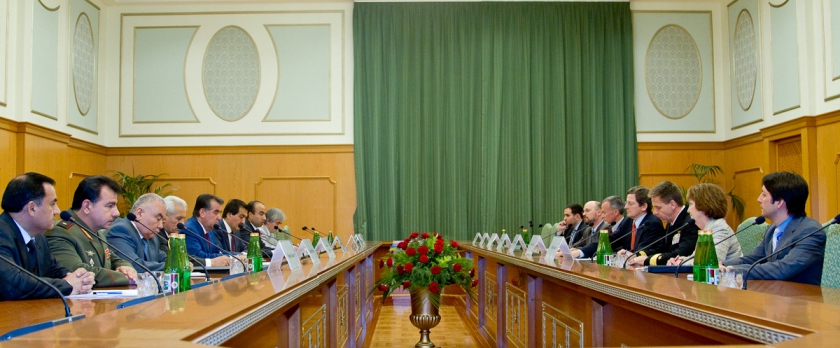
Ambassador Grossman Meets With Tajik President Rahmon and his Senior Officials

U.S. Special Representative to Afghanistan and Pakistan Marc Grossman meets with Tajik President Emomali Rahmon and his senior officials to thank them for their support of the international mission in Afghanistan, in Dushanbe, Tajikistan, on May 20, 2011.